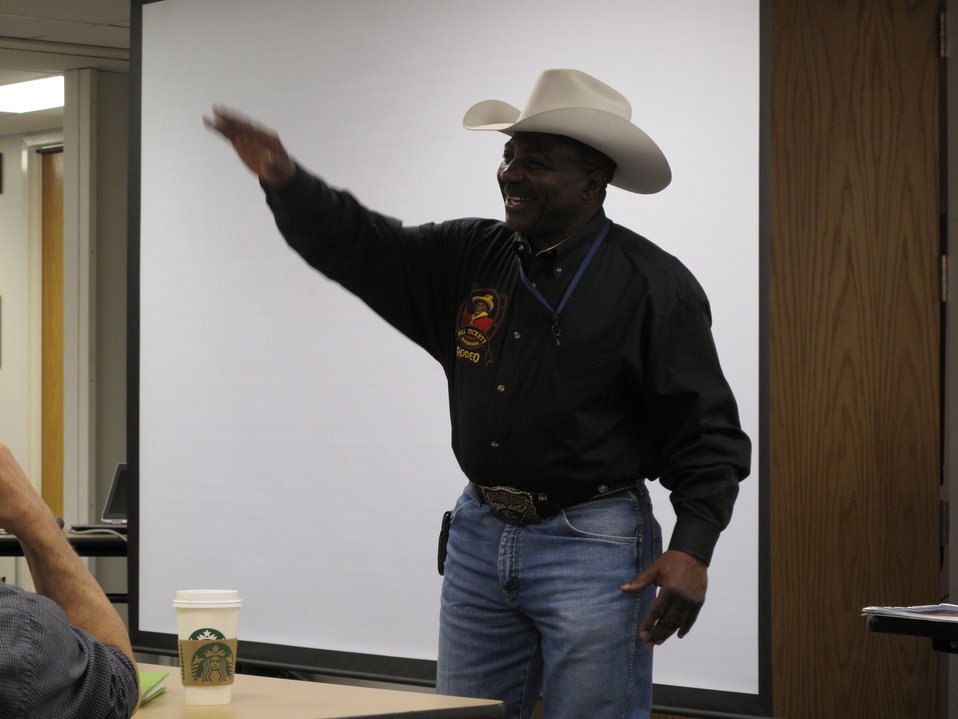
Maurice Wade shares an historical account of black cowboys in Colorado.